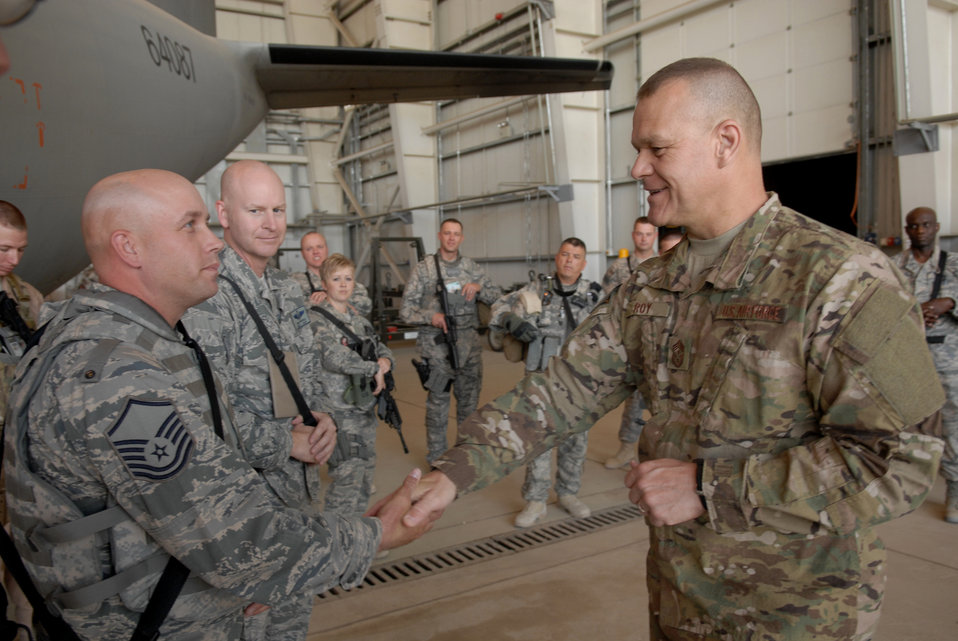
Chief Roy

Chief Master Sgt. of the Air Force James A. Roy visits with Airmen from the 438th Air Expeditionary Wing June 17, 2011, at the Afghan air force compound in Kabul, Afghanistan.